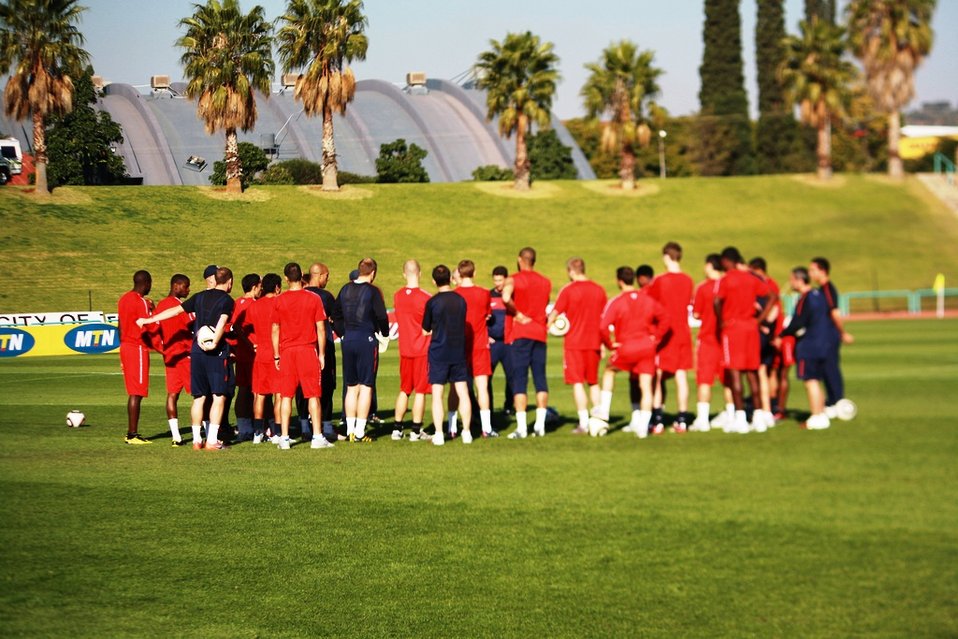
U.S. National Soccer Team Hosts Open Practice

The U.S. National Soccer Team hosts an open practice session with South African students and U.S. Mission to South Africa families at the Pliditch Stadium in Pretoria, South Africa, on June 6, 2010. The U.S. National Soccer Team is preparing for the 2010 World Cup in South Africa.